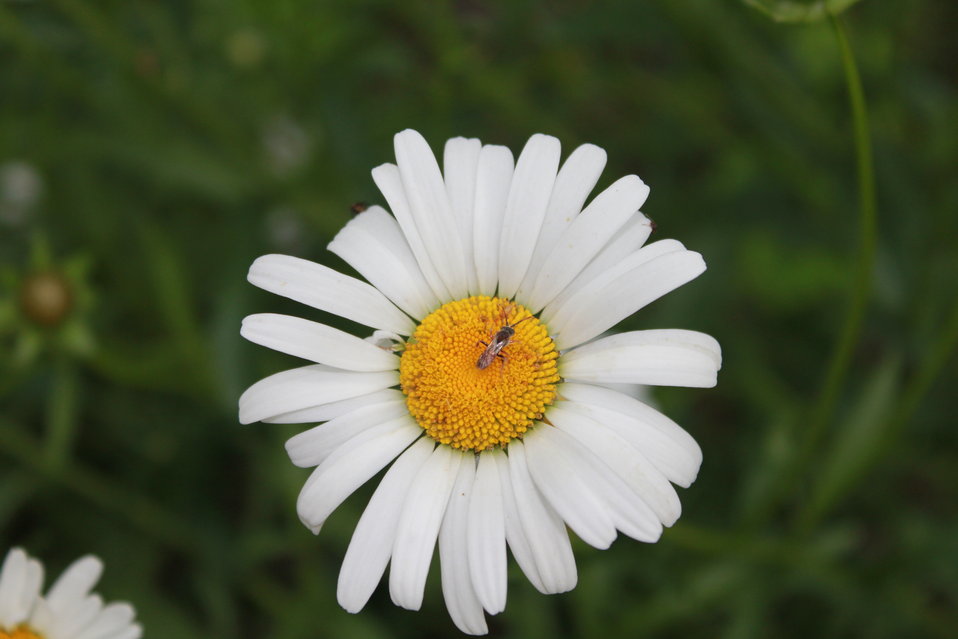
Pollinators in Hadley, MA.